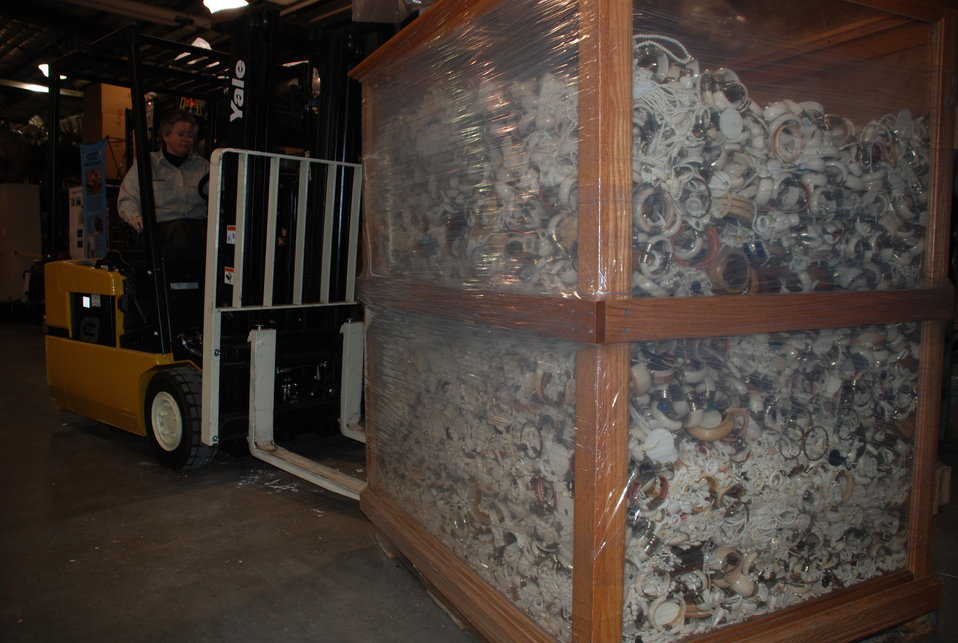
Before sunrise crews began loading ivory which FWS seized during undercover investigations of organized smuggling operations or confiscating at the U.S. border over the past 25 years.